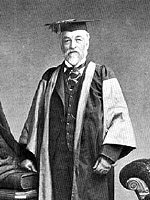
Samuel Pierpont Langley

Samuel P. Langley assumed leadership of the Smithsonian Institution in the 1890s, but continued his experiments with aerodynamics. Langley Air Force Base, Va., is named in his honor.